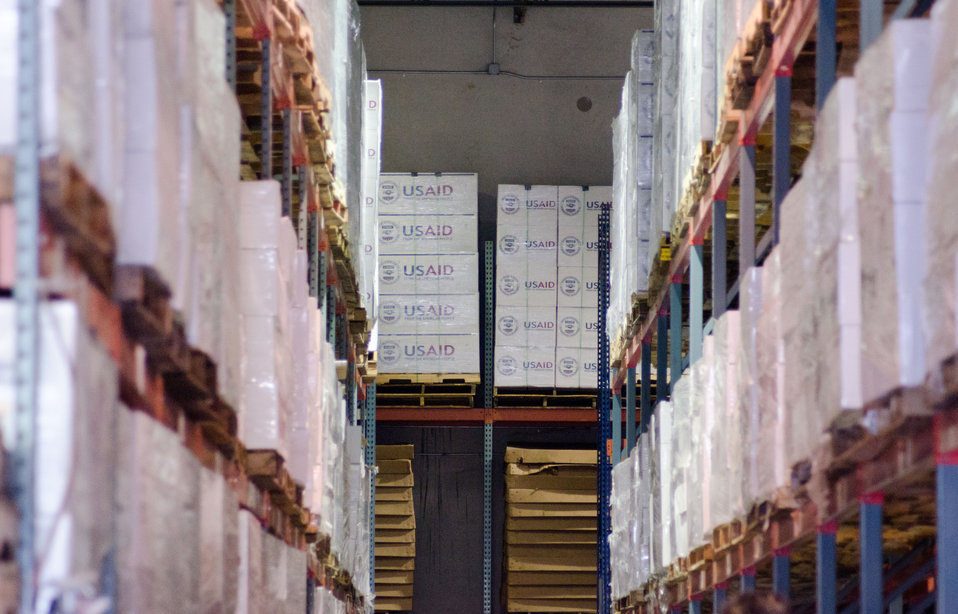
Crowley Logistics in Miami, FL on Friday, August 26, 2011 is one of three U.S. Agency for International Development (USAID) shipping and logistics facilities in the nation. In times of emergency humanitarian relief aid, they can respond with supplies delivered to aircraft at Miami International Airport within two hours. They utilize articulating forklifts, which hinge in the middle to store and retrieve pallets of supplies through narrow aisle ways. This allows for a higher density of stored supplies in the warehouse. Pallets of supplies are stacked three levels high. USAID provides humanitarian assistance through the Office of U.S. Foreign Disaster Assistance (OFDA). OFDA is the lead U.S. Government (USG) office charged with providing and coordinating USG humanitarian assistance in response to international emergencies and disasters. To achieve this, USAID works in cooperation with other USG offices such as the U.S. Department of Agriculture (USDA), and international humanitarian experts. The USDA provides food assistance to support emergency feeding programs in countries experiencing food shortages due to drought and civil conflict.